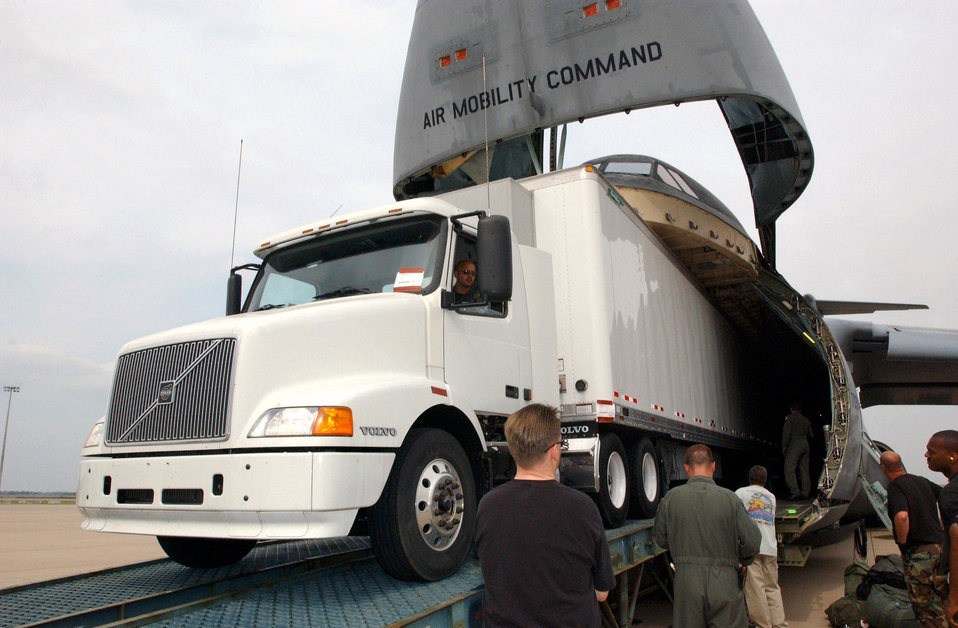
Heavy load

ALTUS AIR FORCE BASE, Okla. (AFPN) -- Crews from the 97th Air Mobility Wing here and the 60th AMW at Travis Air Force Base, Calif., load a semitrailer carrying humanitarian cargo into a C-5 Galaxy for delivery to a forward-deployed location supporting Operation Iraqi Freedom. With clearance coming as close as 4 inches at one point, the trailer took about five hours to load using a Minuteman Missile ramp. The C-5 is assigned to the 60th AMW.